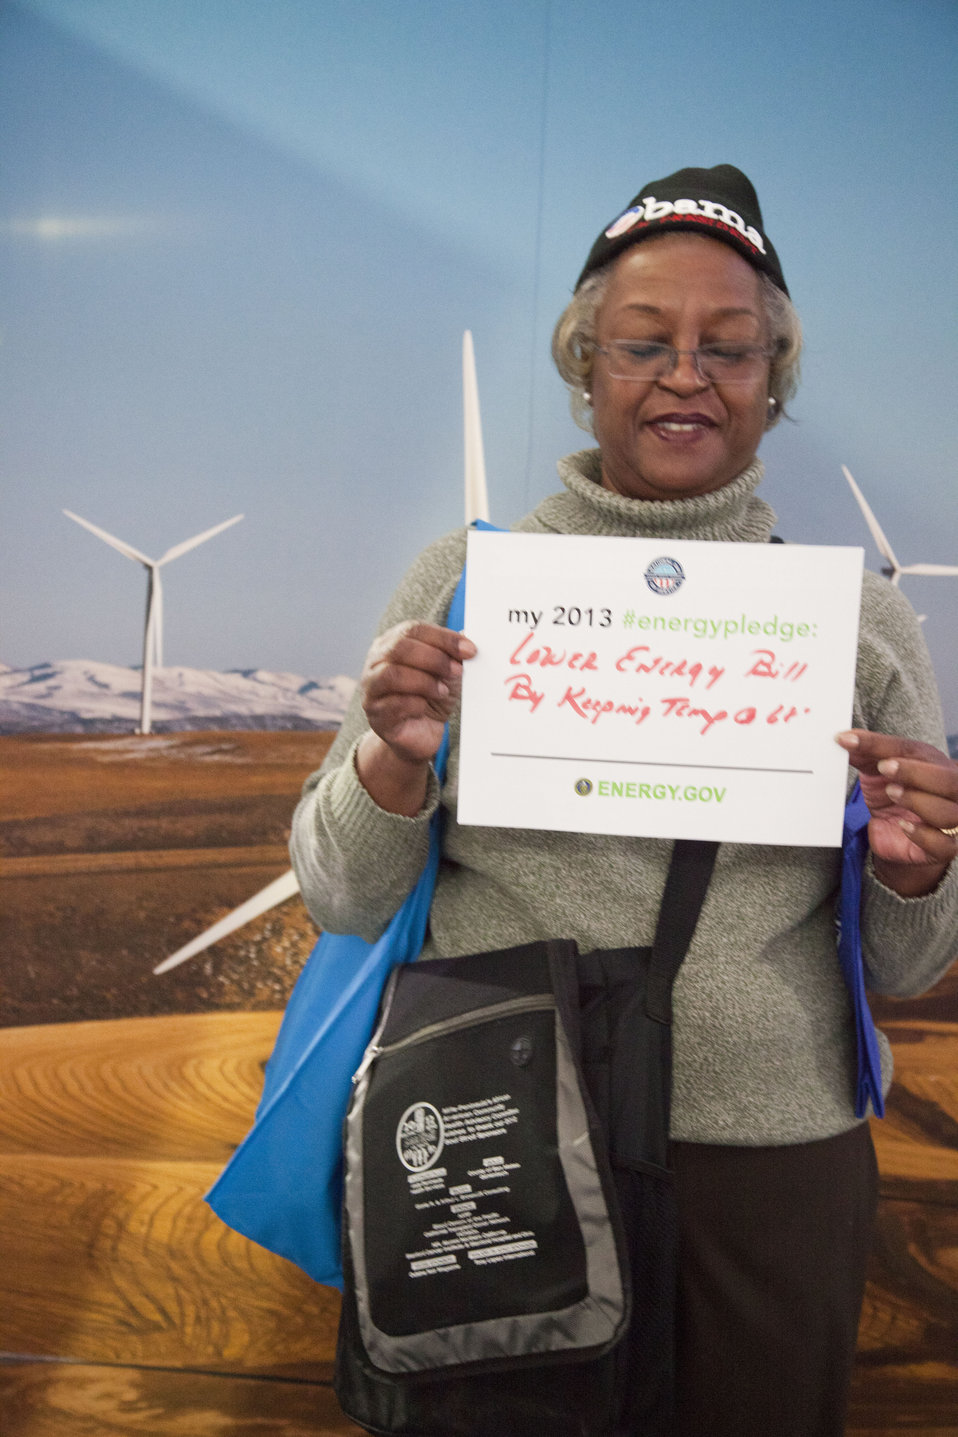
What's your #energypledge?